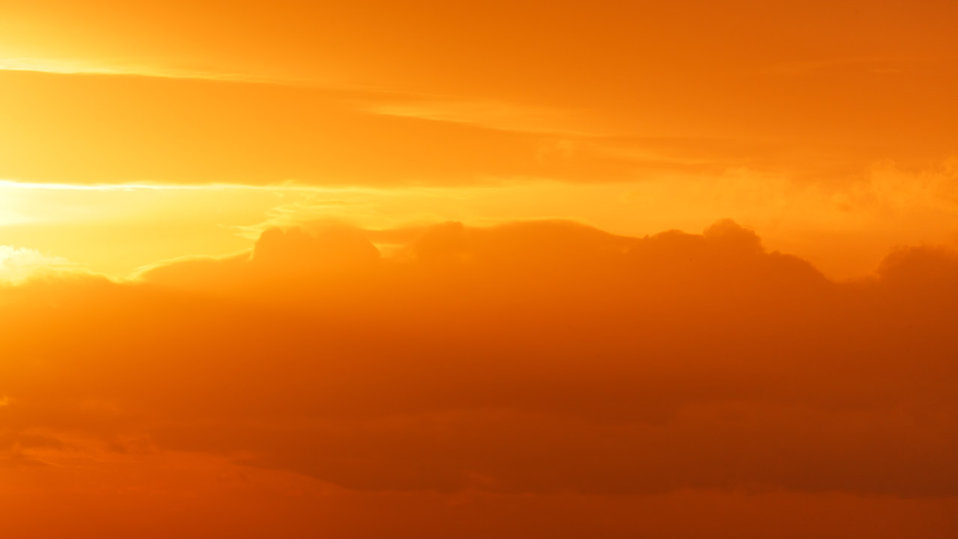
Orange sky background image.